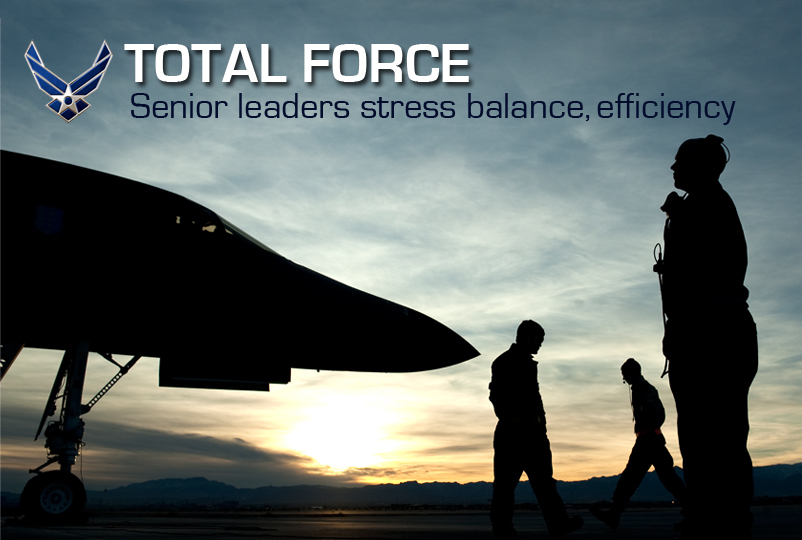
Total Force